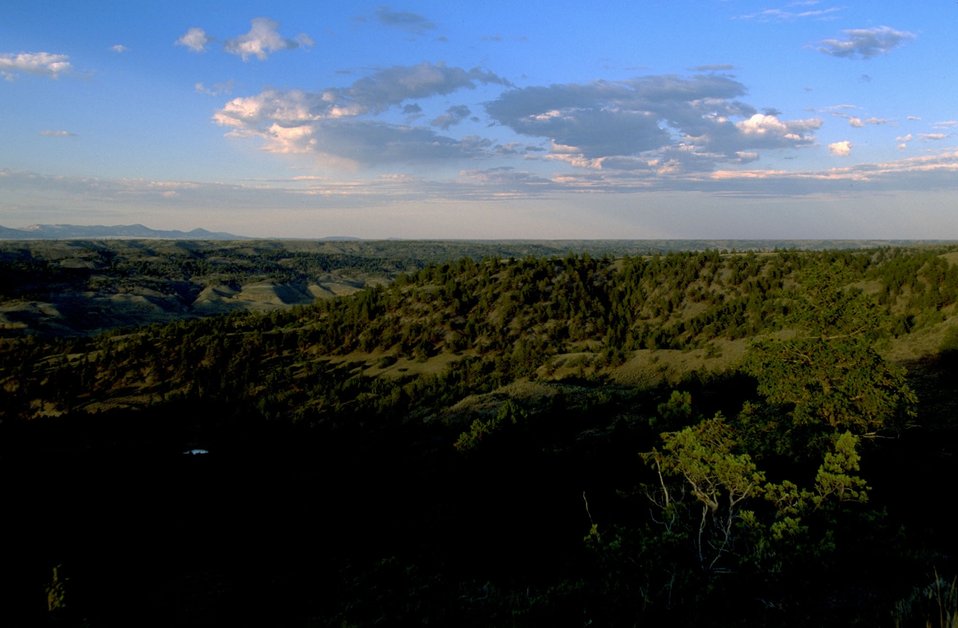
Missouri Breaks topography/scenery